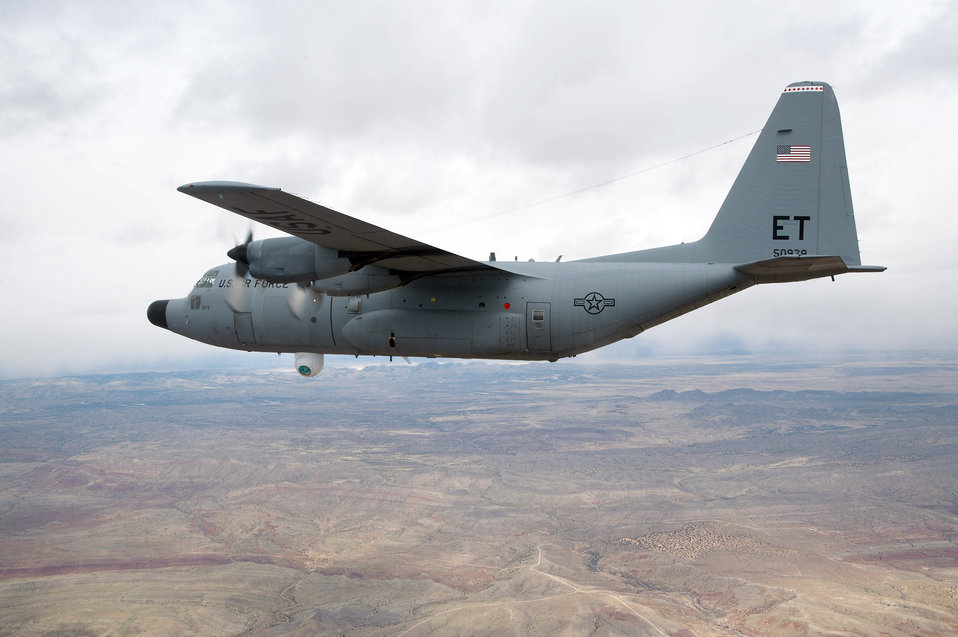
Advanced tactical laser fires high-power laser in flight

A specially modified 46th Test Wing NC-130H aircraft equipped with the Advanced Tactical Laser weapon system fired its laser while flying over White Sands Missile Range, N.M., successfully hitting a target board located on the ground. Equipped with a chemical laser, a beam control system, sensors and weapon-system consoles, the ATL is designed to damage, disable or destroy targets with little or no collateral damage.